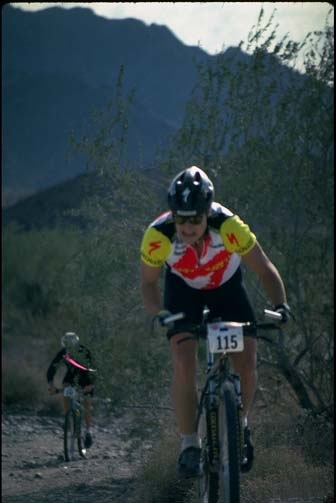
Mountain bike racing in the desert.